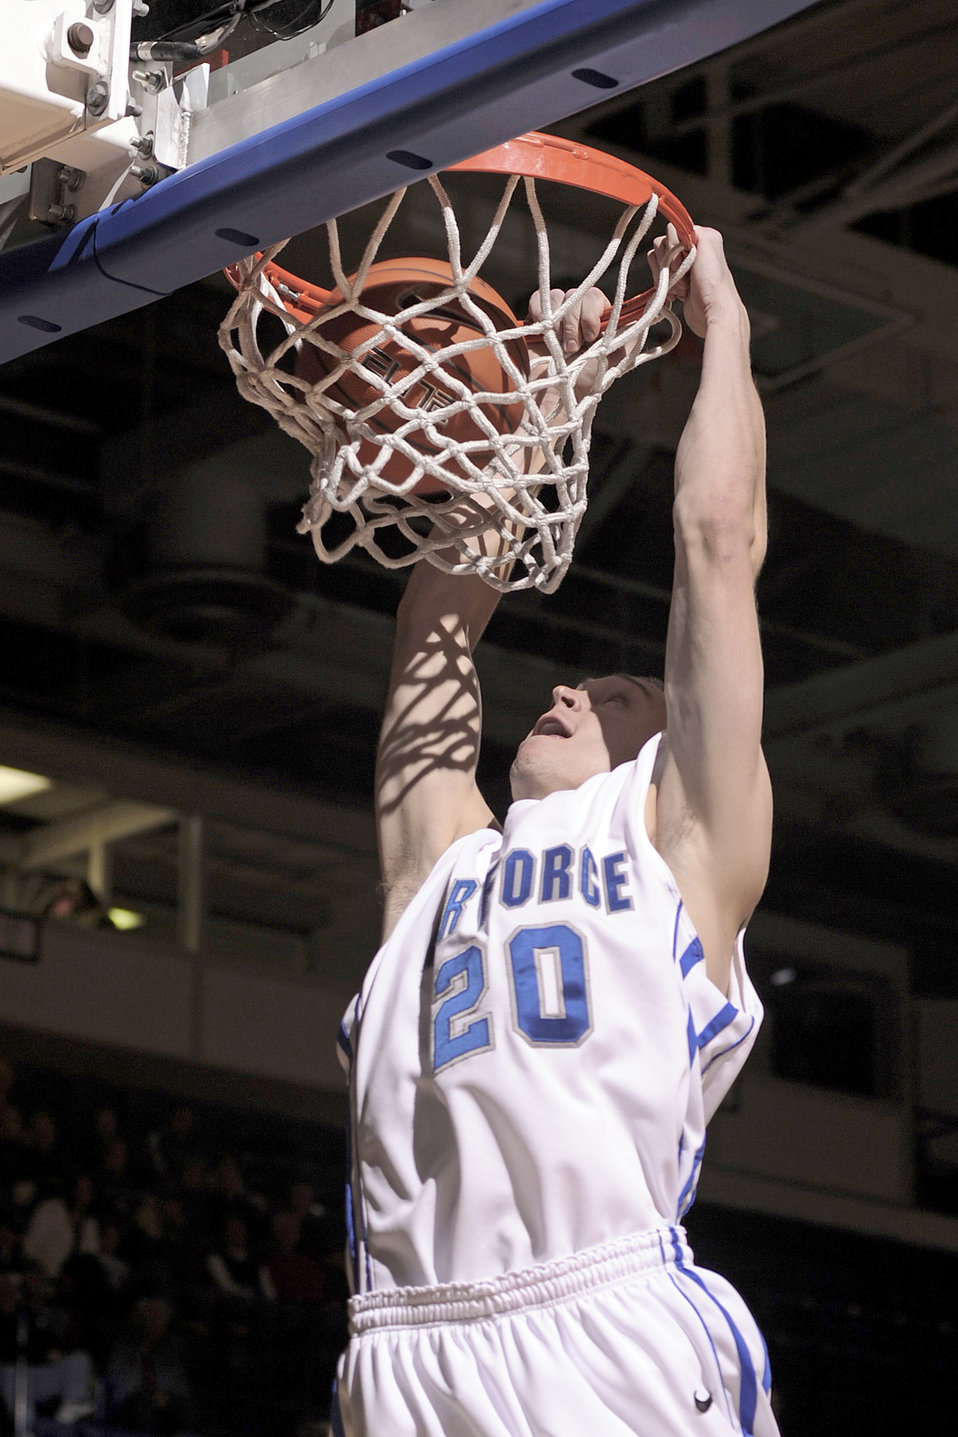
Falcons defeat the Eagles

Falcons forward Tom Fow slams home two points as the U.S. Air Force Academy Falcons defeat North Carolina Central 73-56, Dec 11, 2010, at Clune Arena in Colorado Springs, Colo. Fow had 10 points and 3 rebounds against the Eagles.